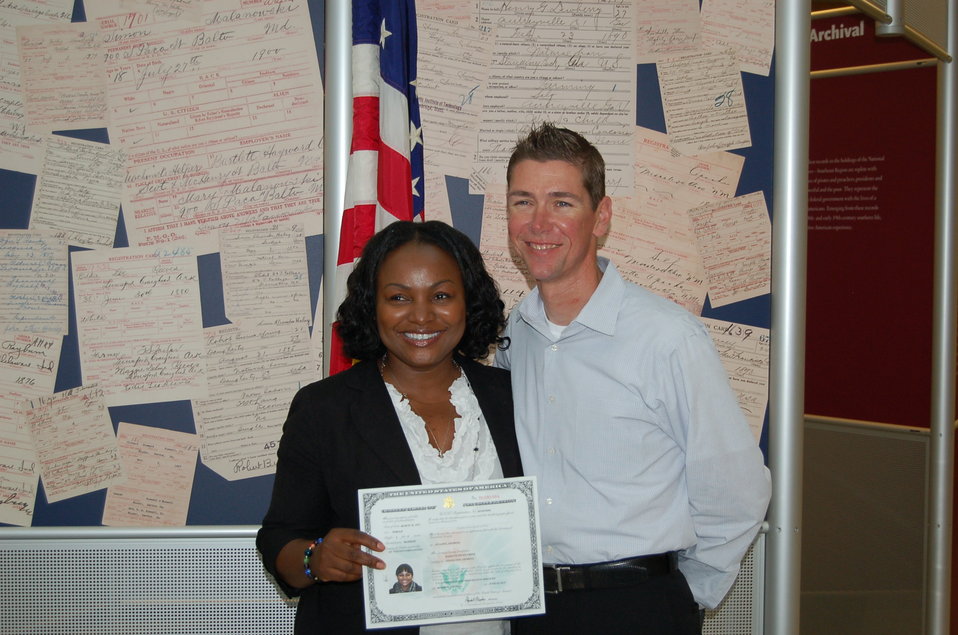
New Citizens